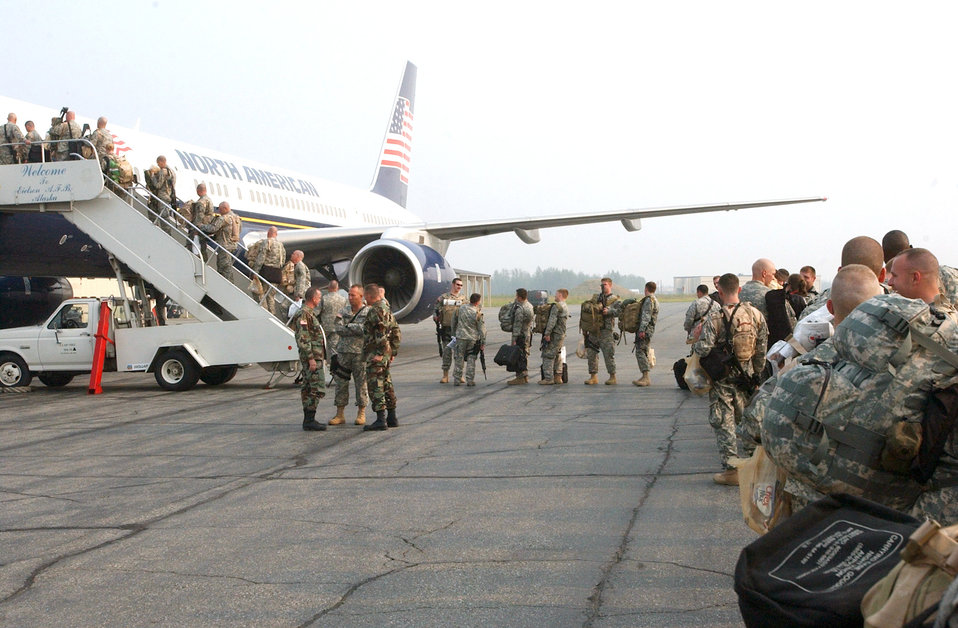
First Air Force Stryker unit deploys to Iraq

EIELSON AIR FORCE BASE, Alaska -- Airmen from the 3rd Air Support Operations Squadron line up to board a transport plane here. The 3rd ASOS, the first Air Force to receive the Stryker armored vehicles, deployed to Iraq on Aug. 14 with the 172nd Stryker Brigade Combat Team from nearby Fort Wainwright.